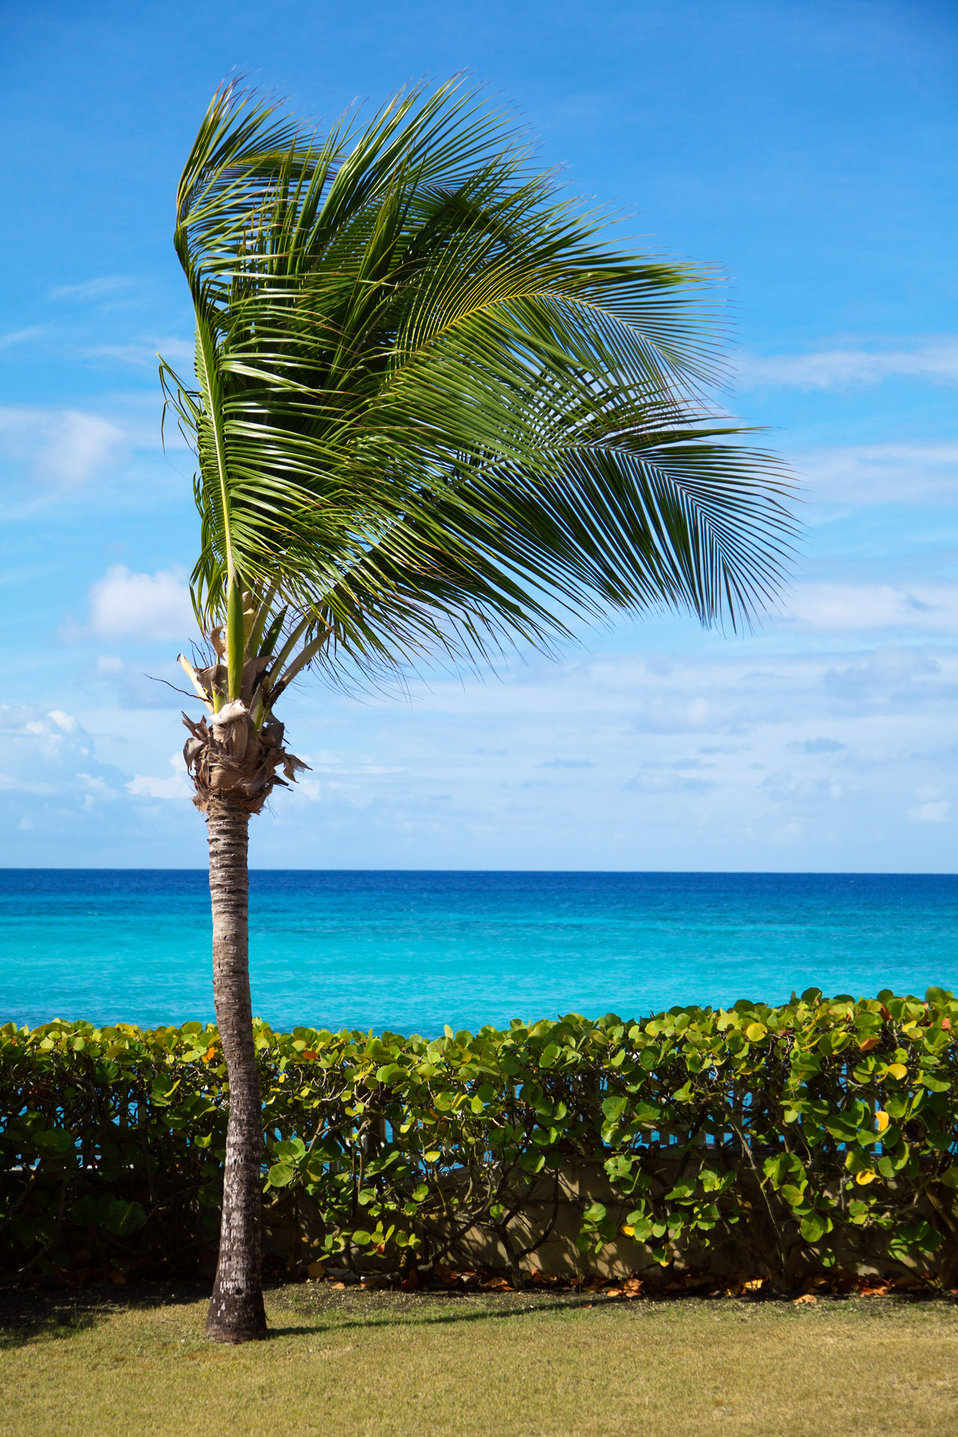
Palm tree on coast

A single palm tree on coast with sea and blue sky on the background.